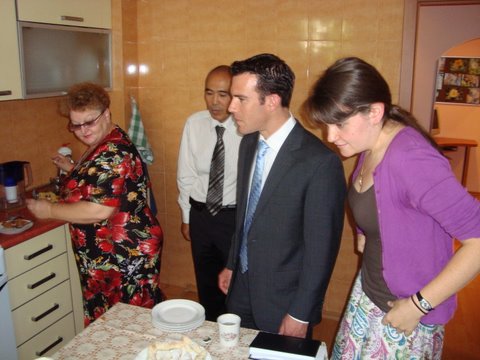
Nina, Matt Lowe, and Anna Whittington Gather Around the Table

Nina, a shelter employee and interpreter, and Matt Lowe and Anna Whittington, State Department personnel, gather around the table at the shelter for Trafficking-in-Persons (TIP) in Almaty, Kazakhtsan, on July 16, 2010.